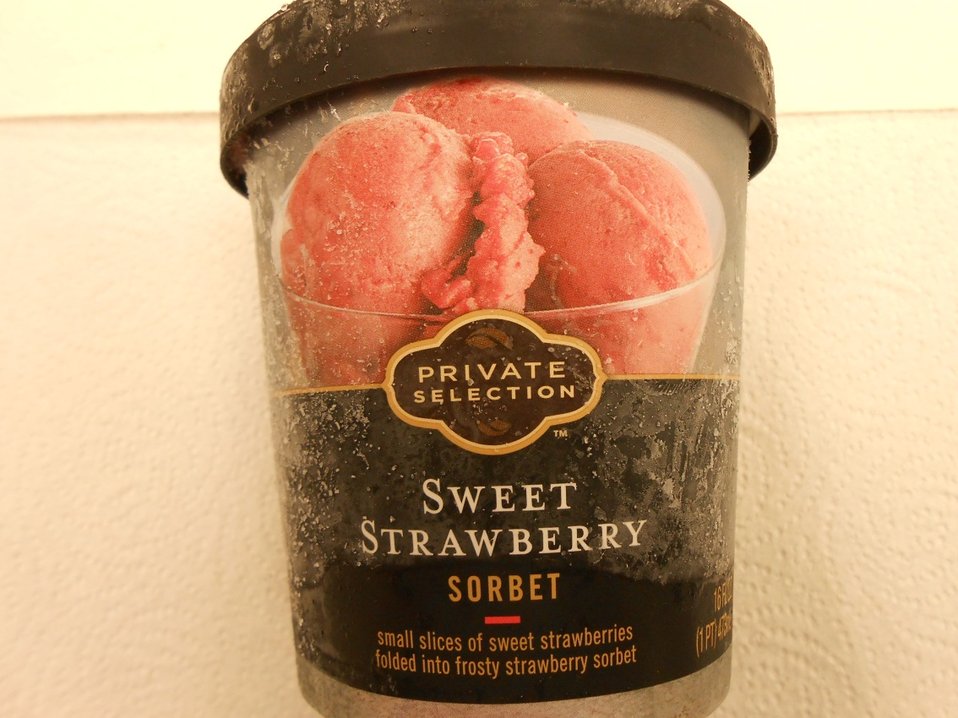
RECALLED - Strawberry Sorbet

April 12, 2014 - Product Recall - Private Selection Sweet Strawberry Sorbet Recalled for Undeclared Allergen.